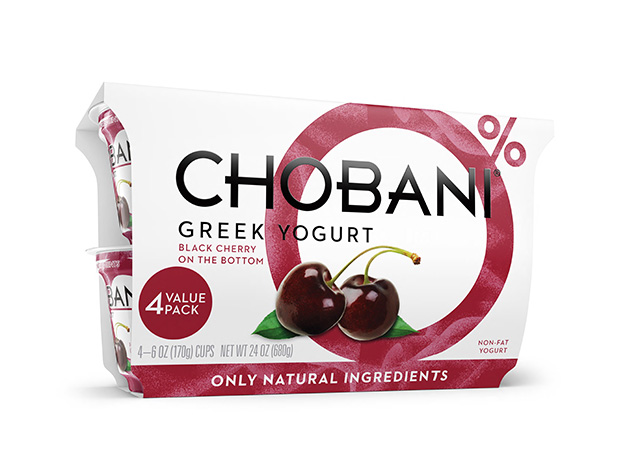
RECALLED – Greek yogurt products

September 6, 2013 – Product Recall – Chobani, Inc. Voluntarily Recalls Greek Yogurt Because of Product Concerns.